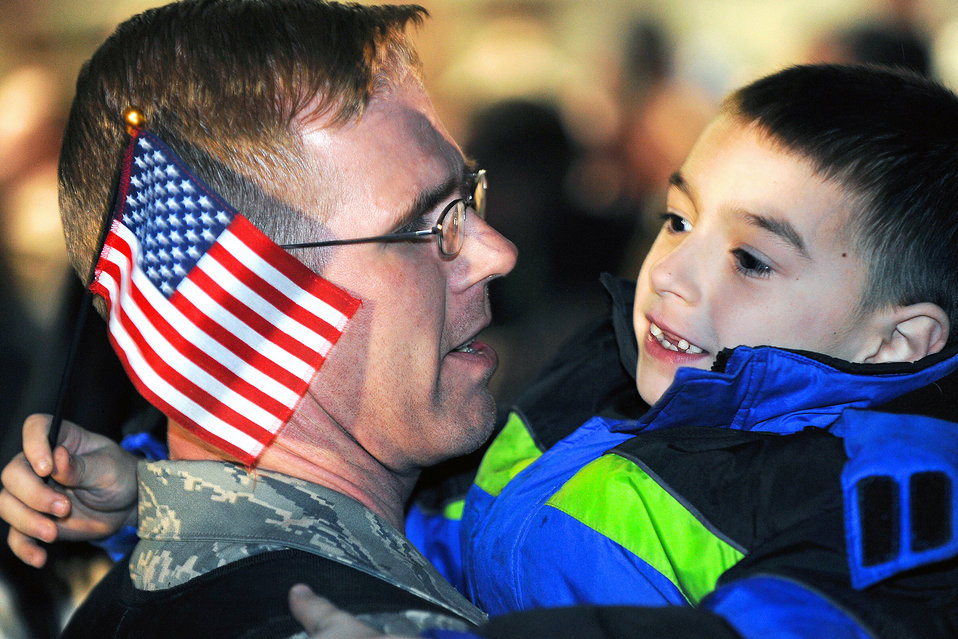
I lost a tooth, Dad!

Tech. Sgt. Joe Jackson hugs his son Jan. 31, 2009, at Ellsworth Air Force Base, S.D. Approximately 300 Airmen returned from deployments supporting operations Iraqi Freedom and Enduring Freedom. Sergeant Jackson is a munitions controller with the 28th Munitions Squadron.